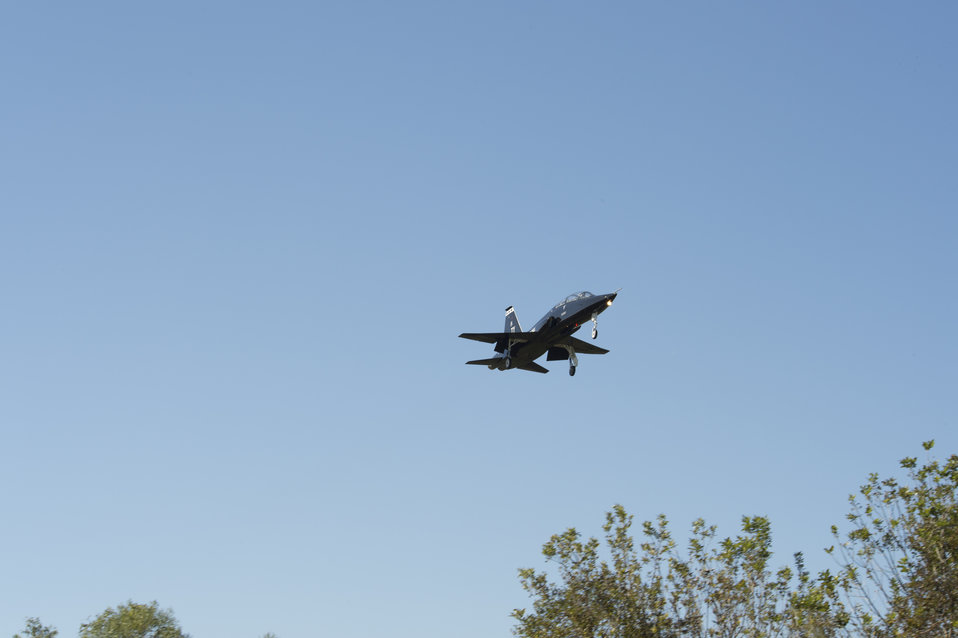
The U.S. Department of Agriculture’s (USDA) Animal and Plant Health Inspection Service (APHIS) Wildlife Services (WS) assists with the humane removal of animals from the Naval Air Station Joint Reserve Base in Belle Chase, LA on Wednesday, Nov. 20, 2013. Animals that wander onto the airstrip are dangerous to aircraft on take off and landing.